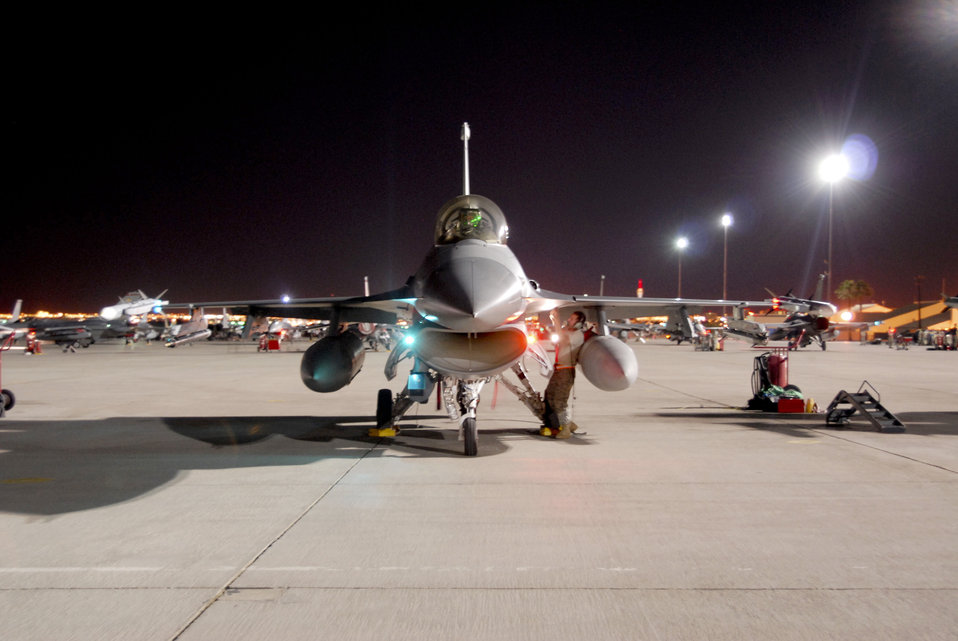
Night exercise, ready to go

Tech. Sgt. Ken Caldwell prepares to launch an F-16 Fighting Falcon from Nellis Air Force Base, Nev., July 12 during a Red Flag exercise. Red Flag exercises are designed to provide the most realistic training environments for United States and allied air forces. Sergeant Caldwell is an aircraft mechanic assigned to the Ohio Air National Guard's 180th Fighter Wing.